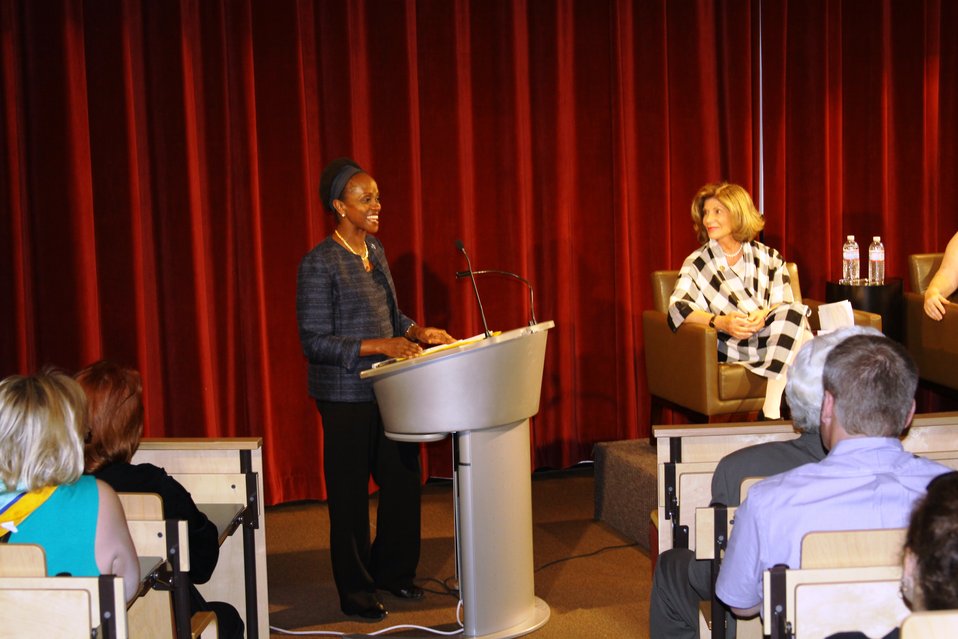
Assistant Secretary Brimmer Speaks to Students and Community Members

Assistant Secretary for International Organization Affairs Esther Brimmer speaks to an audience of students and community members on U.S. efforts to empower women through multilateral diplomacy at the University of Nevada in Las Vegas on September 1, 2011.